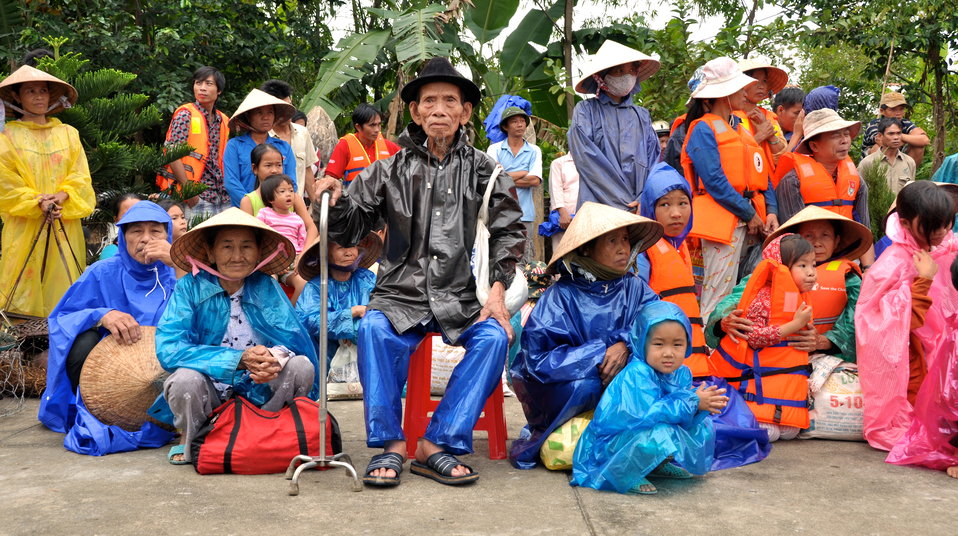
USAID and Save the Children support community evacuation drill and emergency preparedness in central Vietnam

Loc An Commune, Phu Loc District, Thua Thien Hue Province
December 4, 2012, Photo: Richard Nyberg, @USAIDVietnam